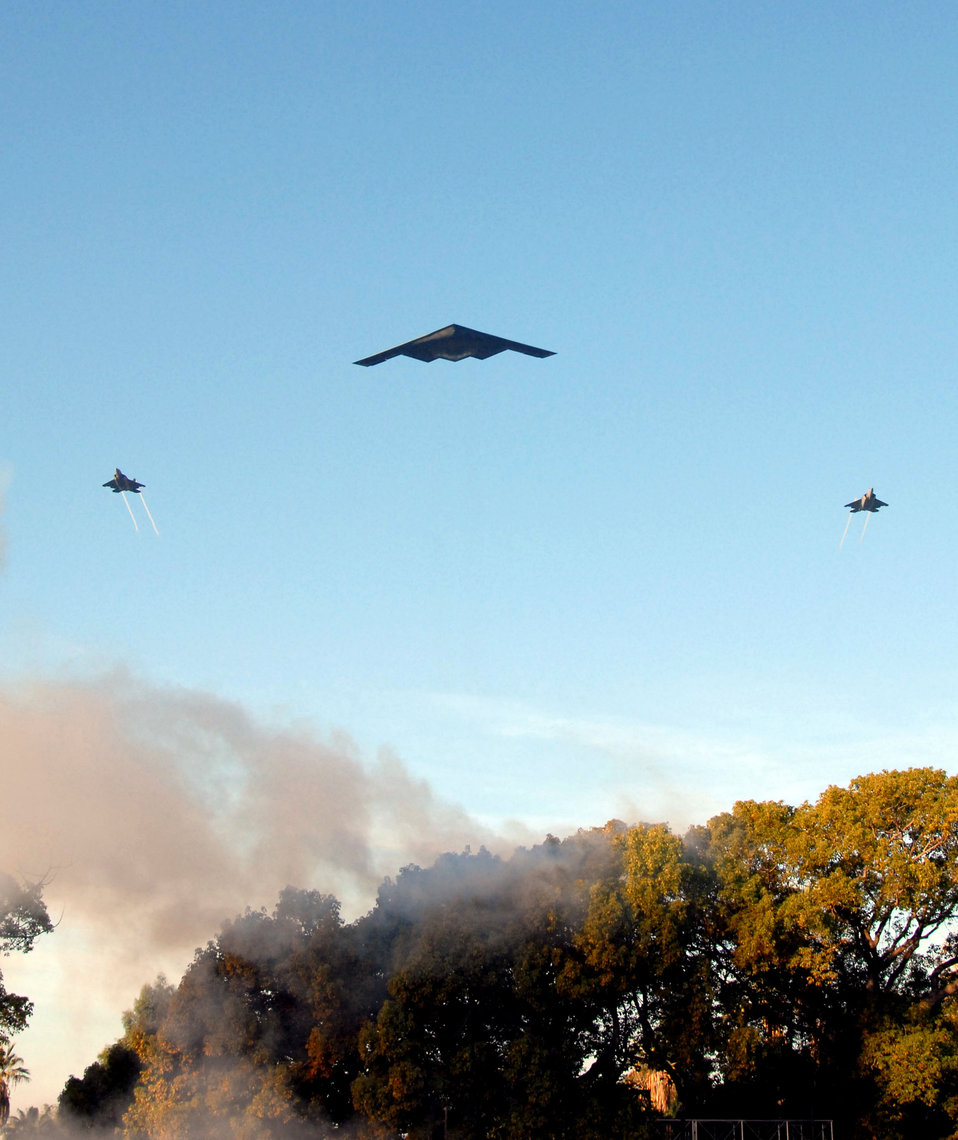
Edwards aircraft soar over 118th Rose Parade

A B-2 Spirit, flanked by two F-22 Raptors, flies over the main parade route during the opening ceremonies of the 118th Rose Parade in Pasadena, Calif., Jan. 1. The aircraft are all from the Air Force Flight Test Center at Edwards Air Force Base, Calif. Participating in the Rose Parade is one of the events helping highlight the Air Force's 60th anniversary in September.